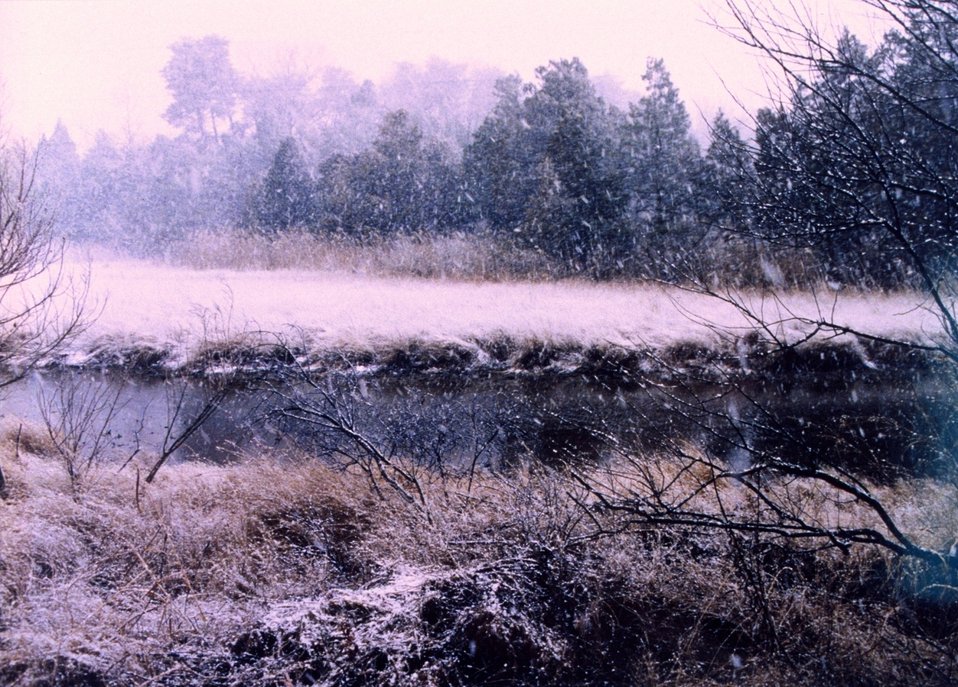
A snowy winter day in the marsh.